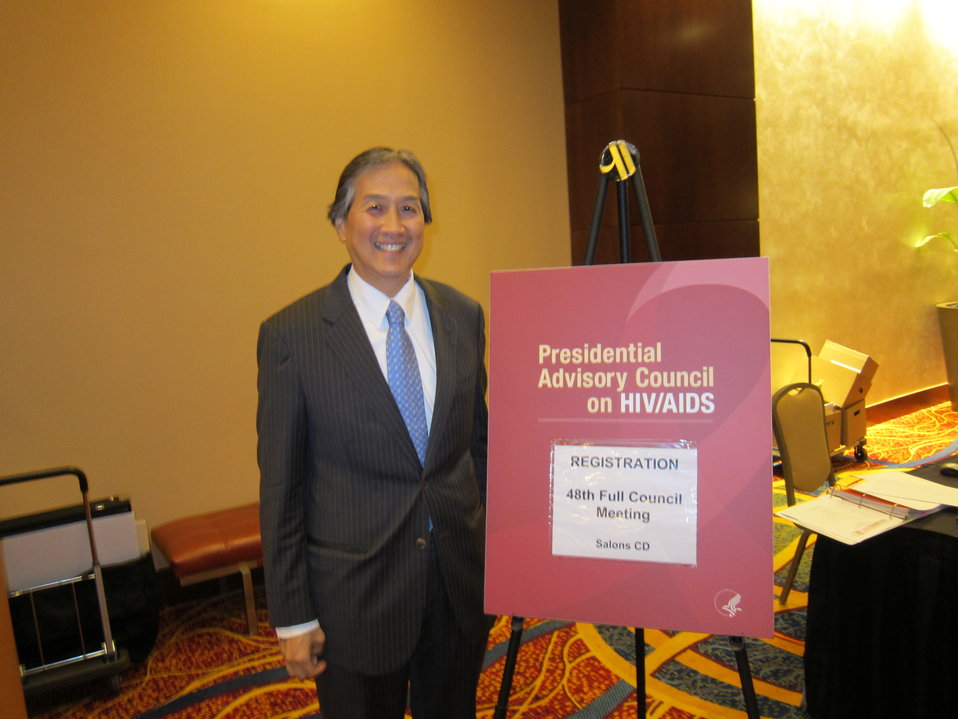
PACHA Oct 2012

PACHA